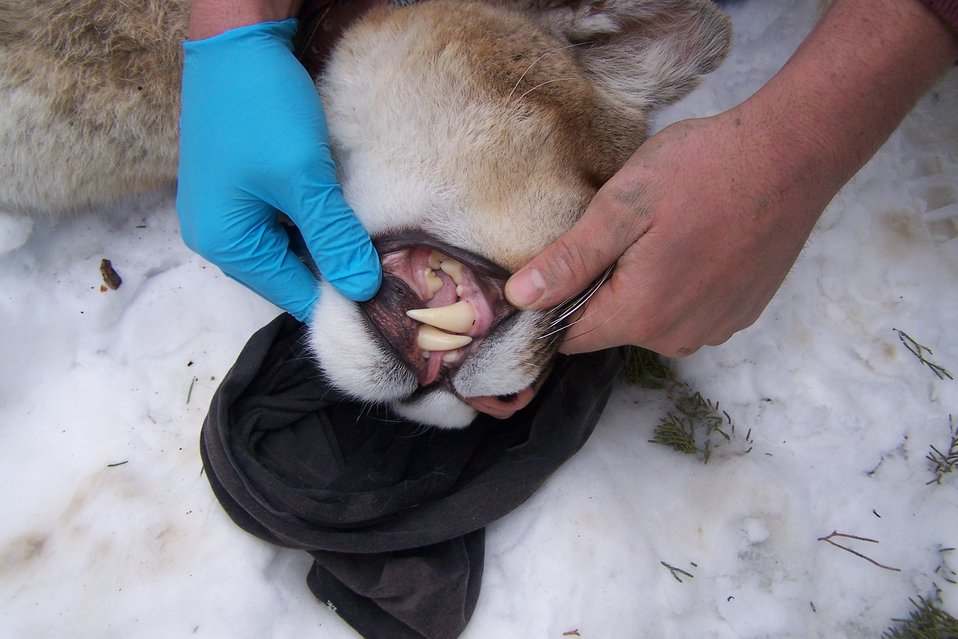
Sedated Mountain Lion

This lion is sedated while biologists take samples and collar it for a study on CMR NWR.